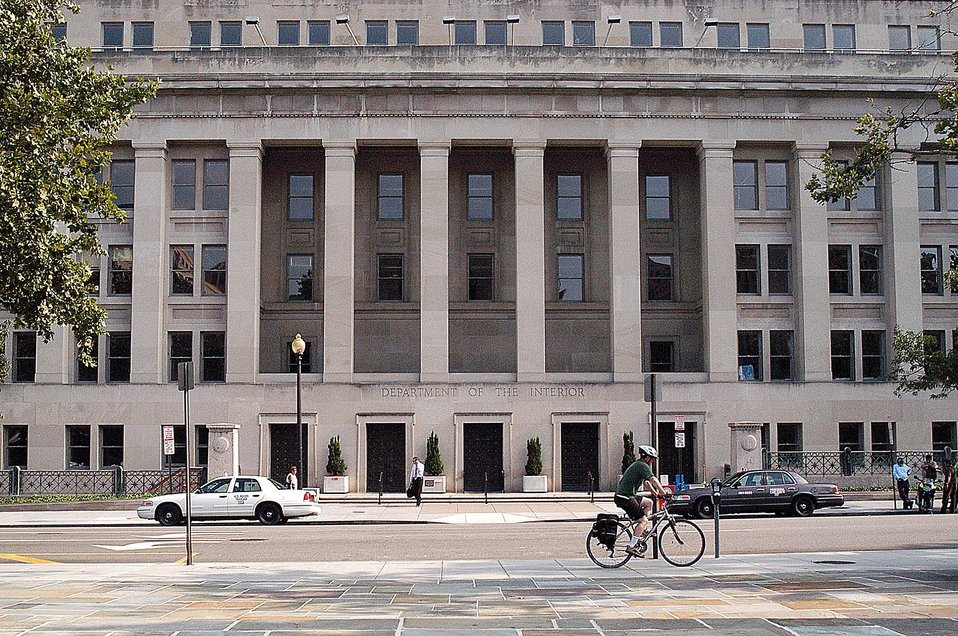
Department of the Interior building in Washington DC on 1849 C Street N.W. Photo by Tom Iraci, July 2004.